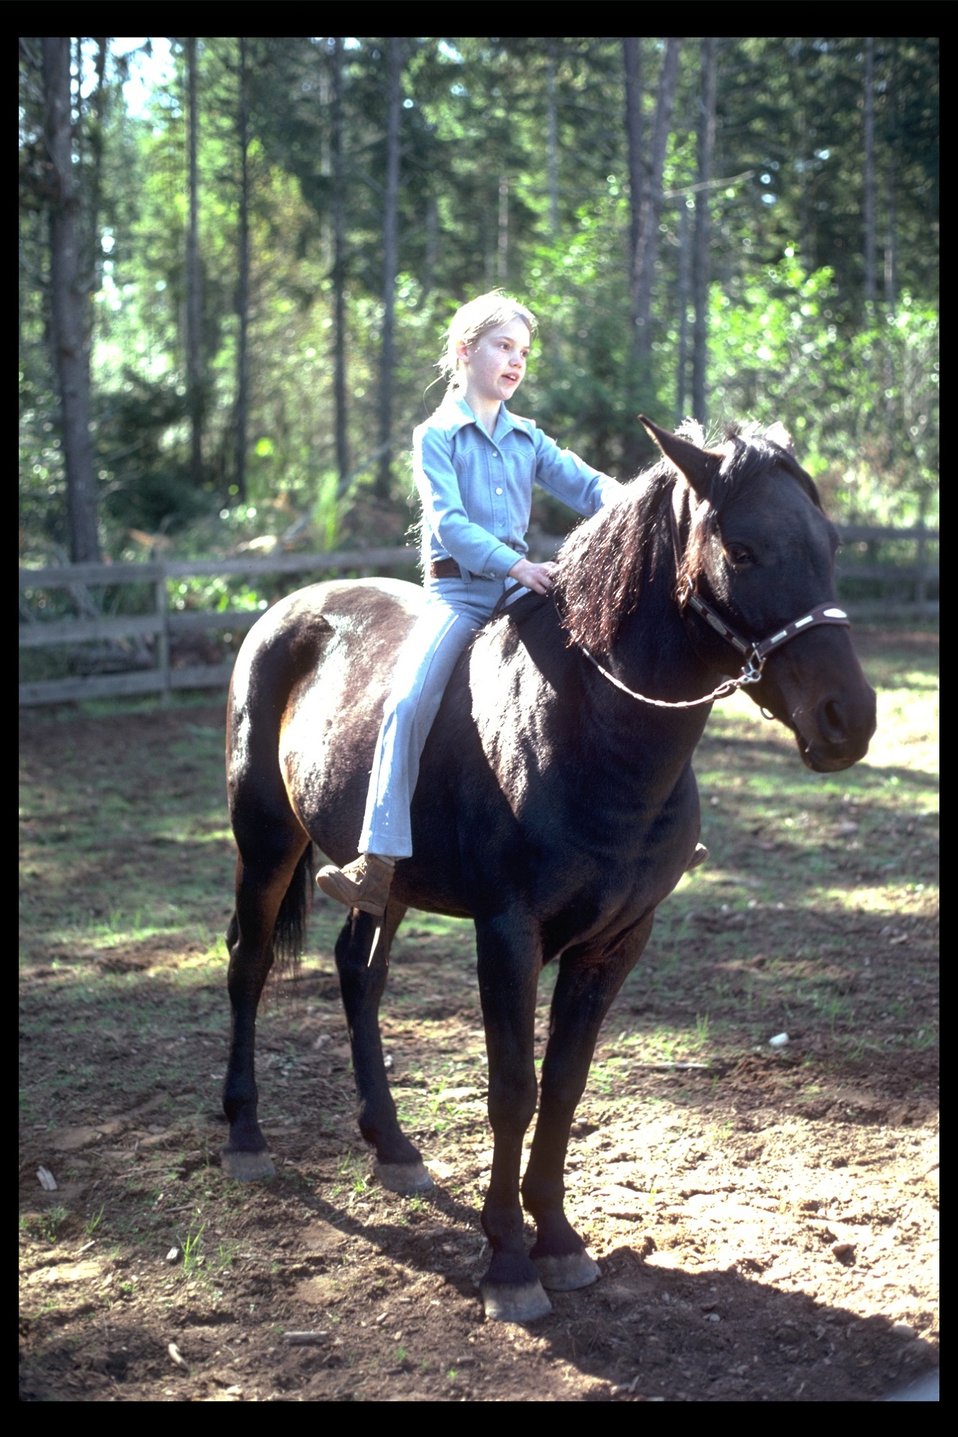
Proud adopter on her wild horse.